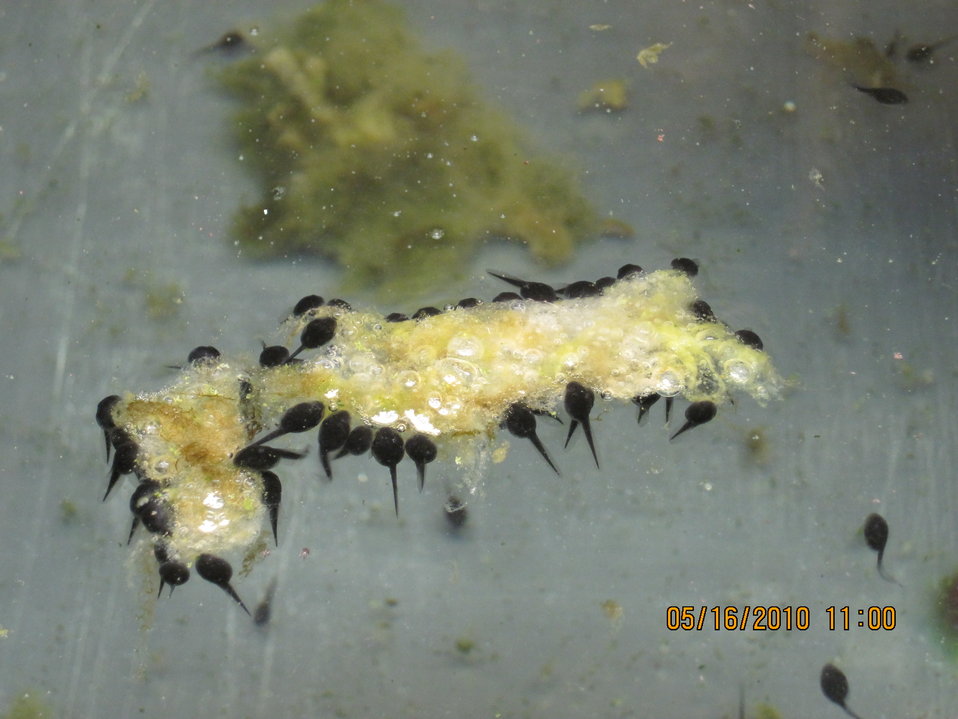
Wyoming Tadpoles

Tadpoles at the Saratoga Fish Hatchery, these tadpoles will be raised into adult hood and then release back into the wild.